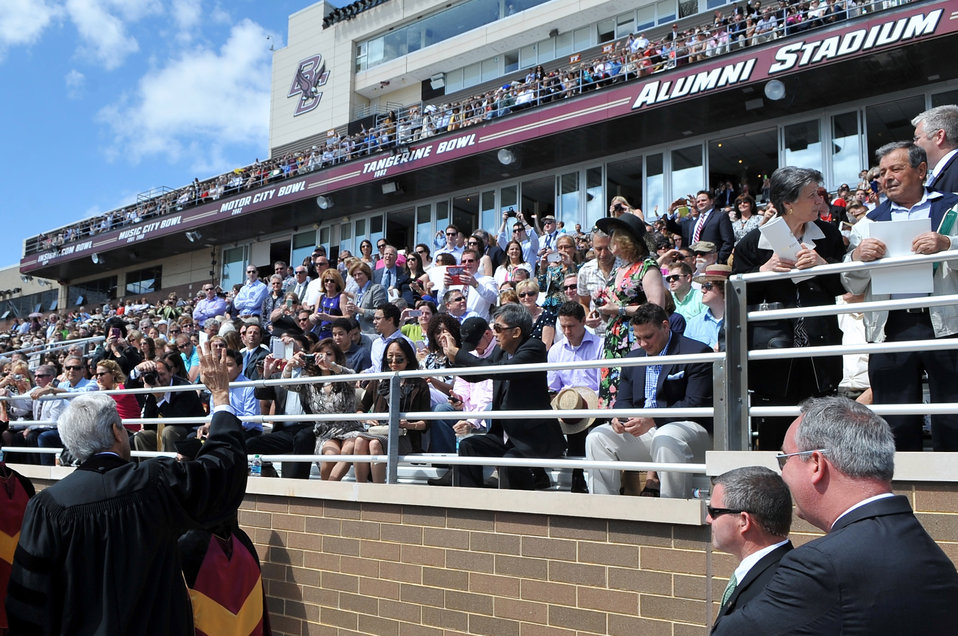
Secretary Kerry Waves to Families, Friends of Boston College Graduates

U.S. Secretary of State John Kerry waves to family members and friends of the graduating class as he entered Alumni Stadium to deliver the commencement address at Boston College in Boston, Massachusetts, on May 19, 2014.